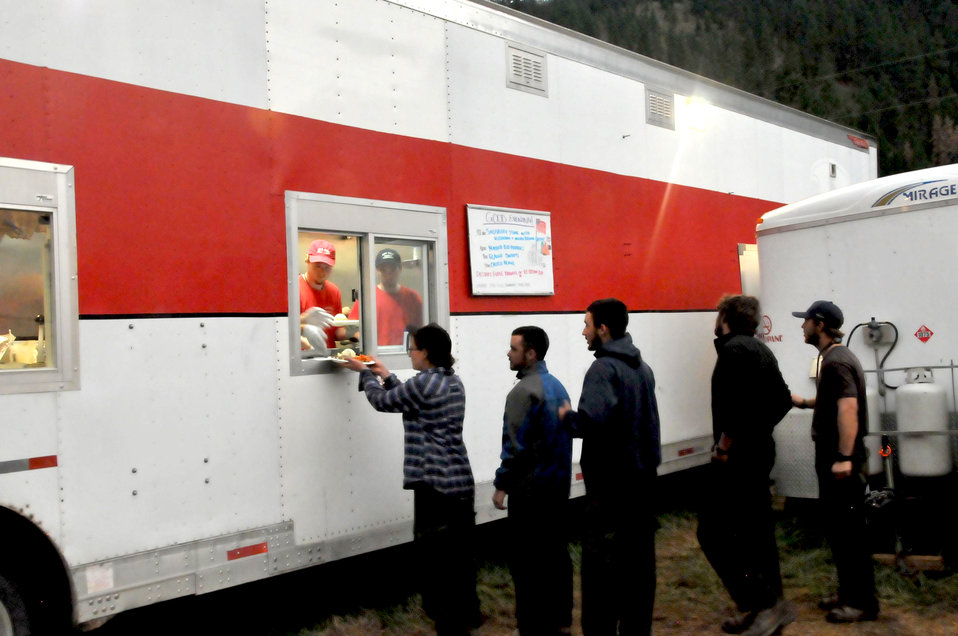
Great Northern Hotshot Crew stand in the chow line getting supper from the caterer assigned to the Gold Pan Fire. Catering contractors are required to provide breakfast, a sack lunch and supper totaling 6000 calories per day for each firefighter. The Gold Pan Fire in the Bitterroot National Forest near Conner, MT began by lightning on Jul. 16, 2013 by lighting have consumed approximately 17,163 acres.